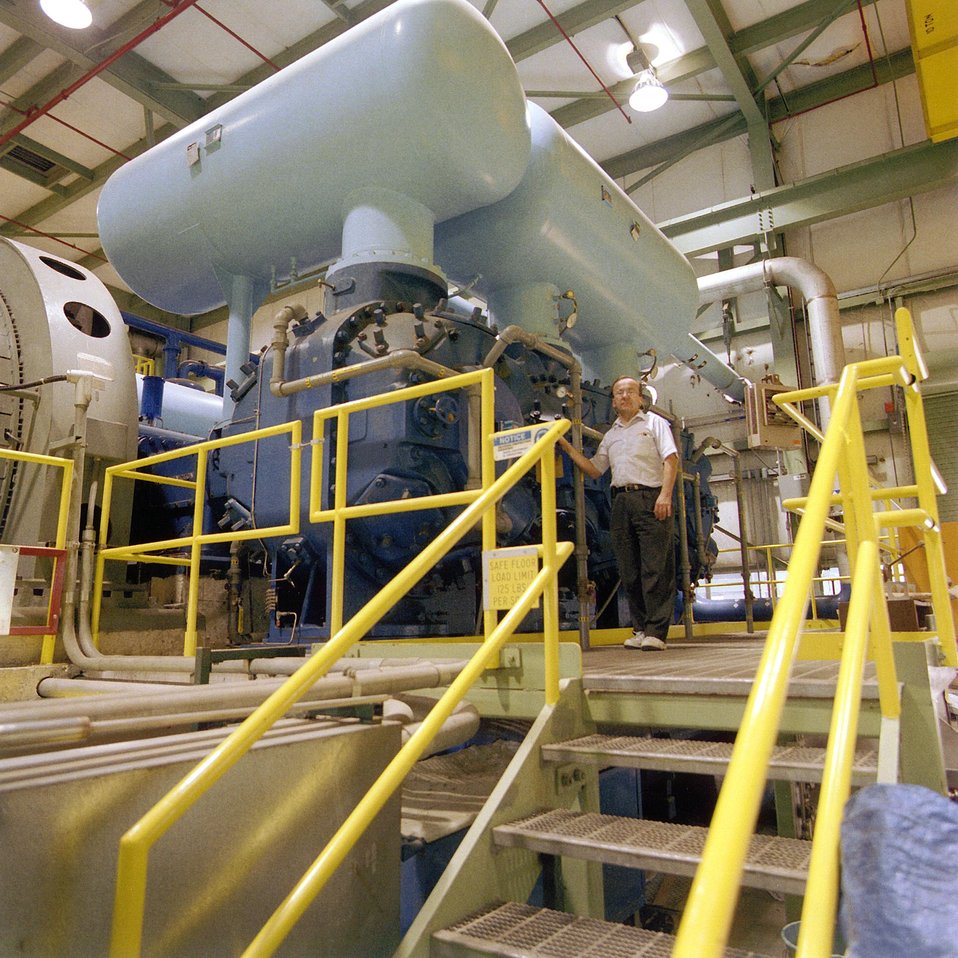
THE CENTRAL HELIUM LIQUEFIER HELIUM COMPRESSORS IN FERMILAB'S HELIUM PLANT.

SIX BUILDINGS WITH 24 COMPRESSORS AND 24 REFRIGERATORS ARE LOCATED ALONG THE TEVATRON, THE WORLD'S MOST POWERFUL ACCELERATOR. WITH HELP FROM THE CENTRAL HELIUM LIQUEFIER, THE REFRIGERATORS PRODUCE THE LIQUID HELIUM TO COOL THE SUPERCONDUCTING MAGNETS INSIDE THE TEVATRON TUNNEL. CAREFULLY ALIGNED, THE MAGNETS ARE NEEDED TO GUIDE PROTON AND ANTIPROTON BEAMS AROUND THE FOUR MILE LONG RING.